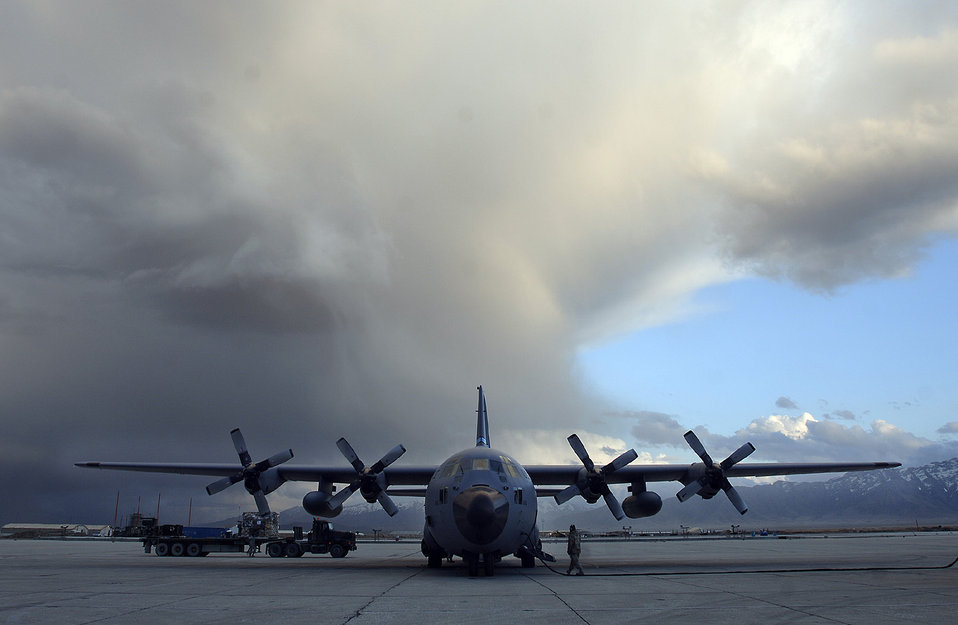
Operation Enduring Freedom

A C-130 Hercules taxis in to refuel at the Bagram Airfield, Afghanistan March 22. This week Air Force C-130s and C-17 GLobemaster IIIs flew nearly 1,131 airlift sorties, delivered more than 2,681 tons of cargo, and transported approximately 22,103 passengers.